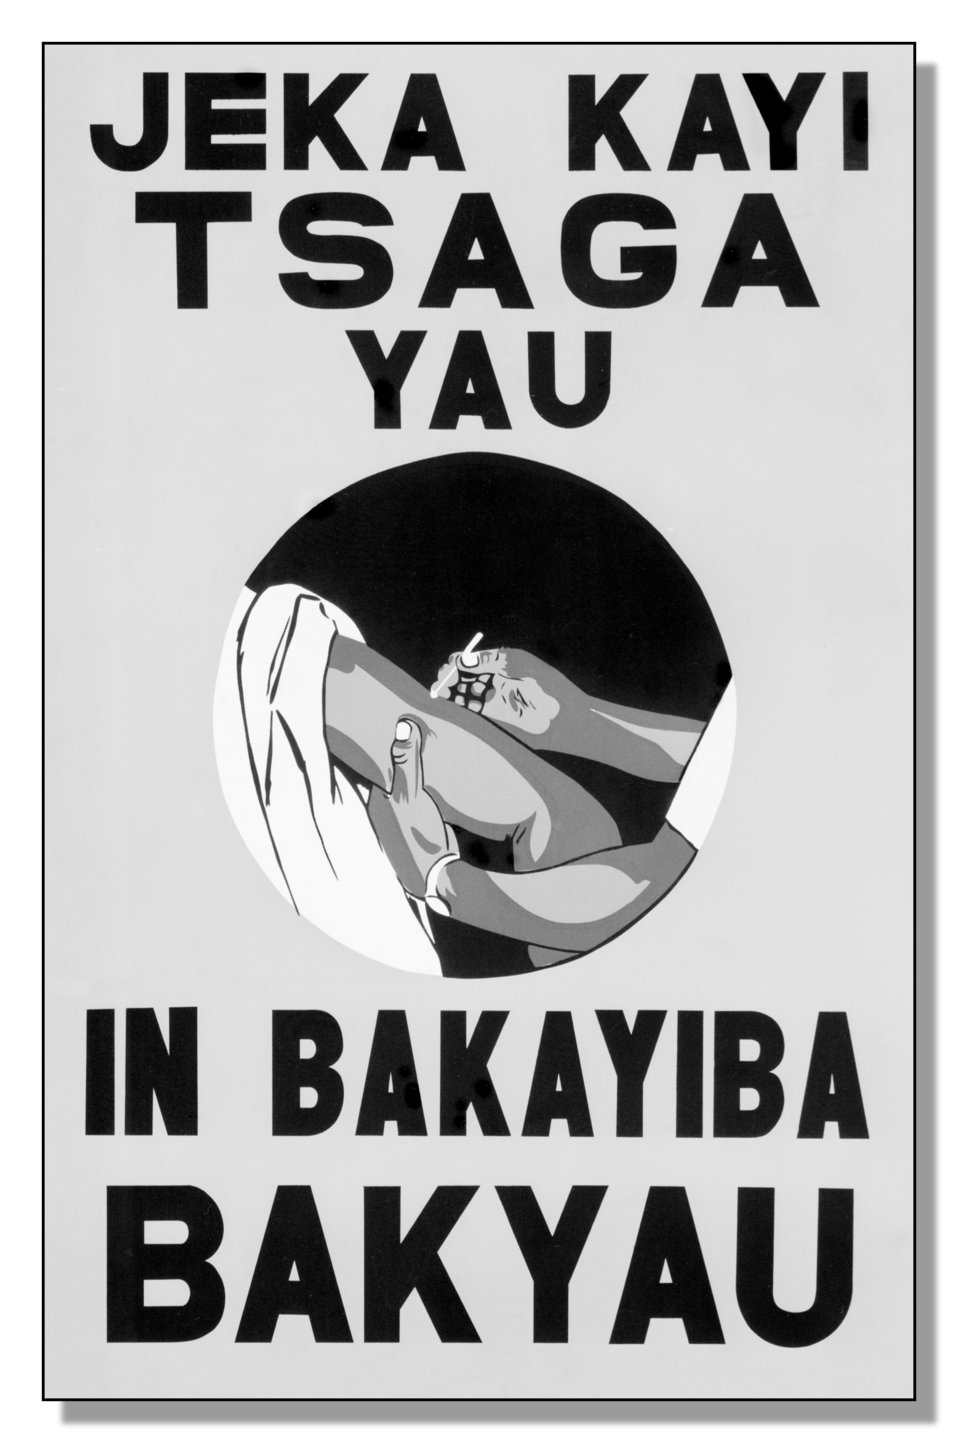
Early pre-1979 poster promoting the importance of Smallpox and Measles vaccinations in foreign lands.